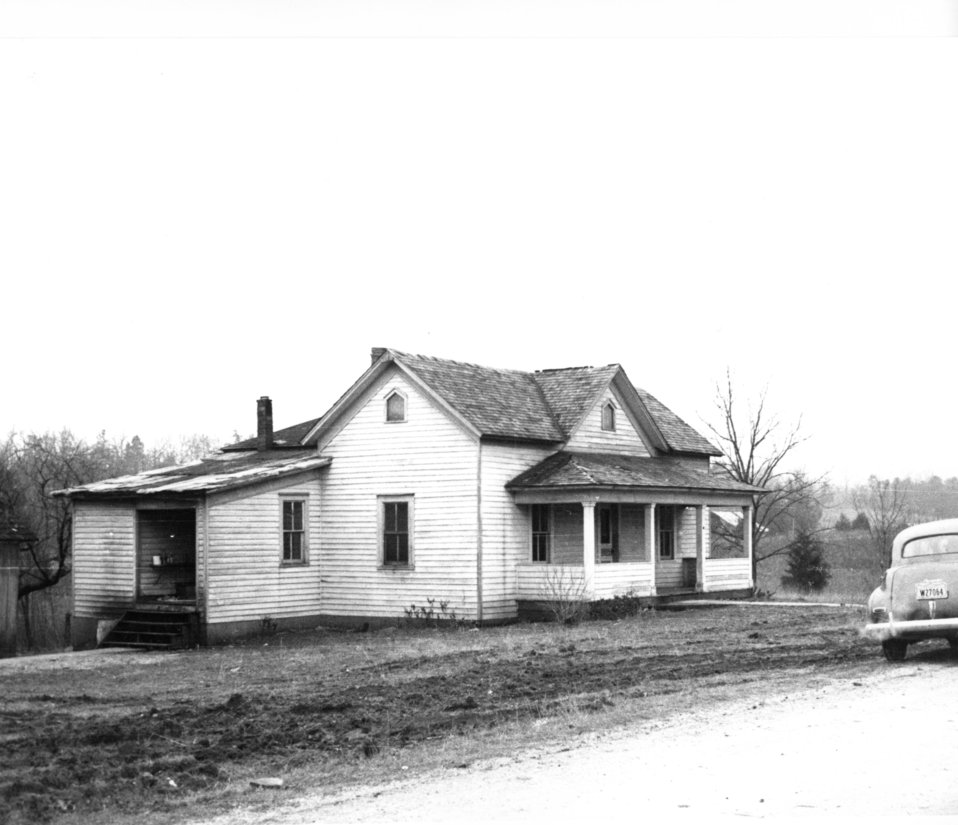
Early settlers at Oak Ridge